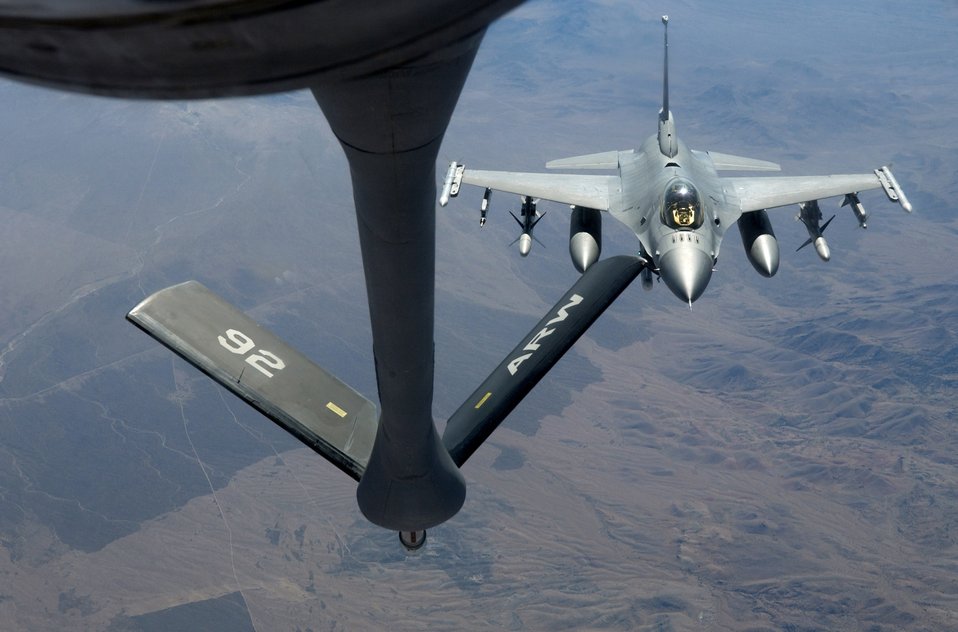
Red Flag kicks off at Nellis

An F-16 Fighting Falcon approaches the boom on a KC-135 Stratotanker to refuel Oct. 11 during Red Flag 07-1 being held at Nellis AFB, Nev. Red Flag runs from Oct. 10 to 20 and tests aircrews' warfighting skills in realistic combat situations. The aircraft will be flying missions during the day and night at the nearby Nevada Test and Training Range where they will simulate an air war. U.S. servicemembers, with representatives from each branch of service along with coalition forces, are participating in Red Flag.